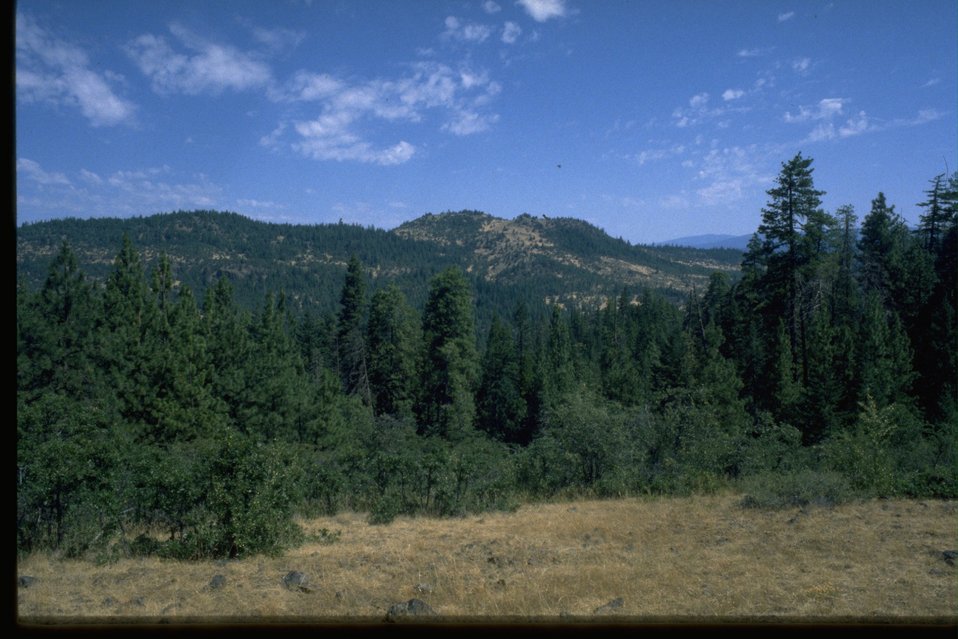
Oregon Gulch RNA.